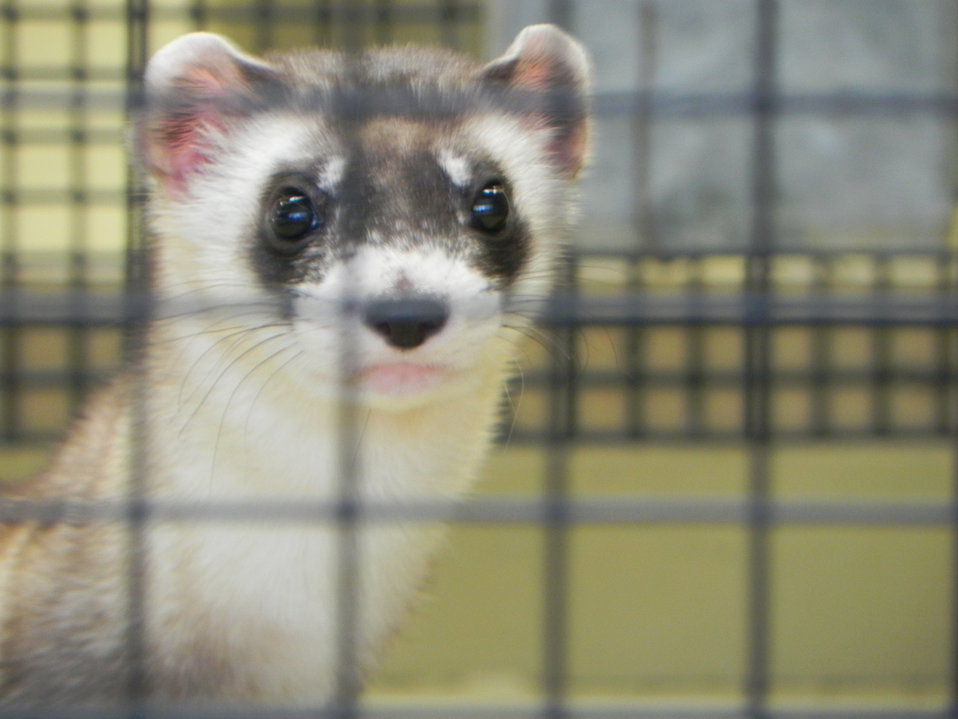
Black-footed Ferret

A black-footed ferret peers out from a cage at the BBF Breeding Center at the Phoenix Zoo 11/18/2010.